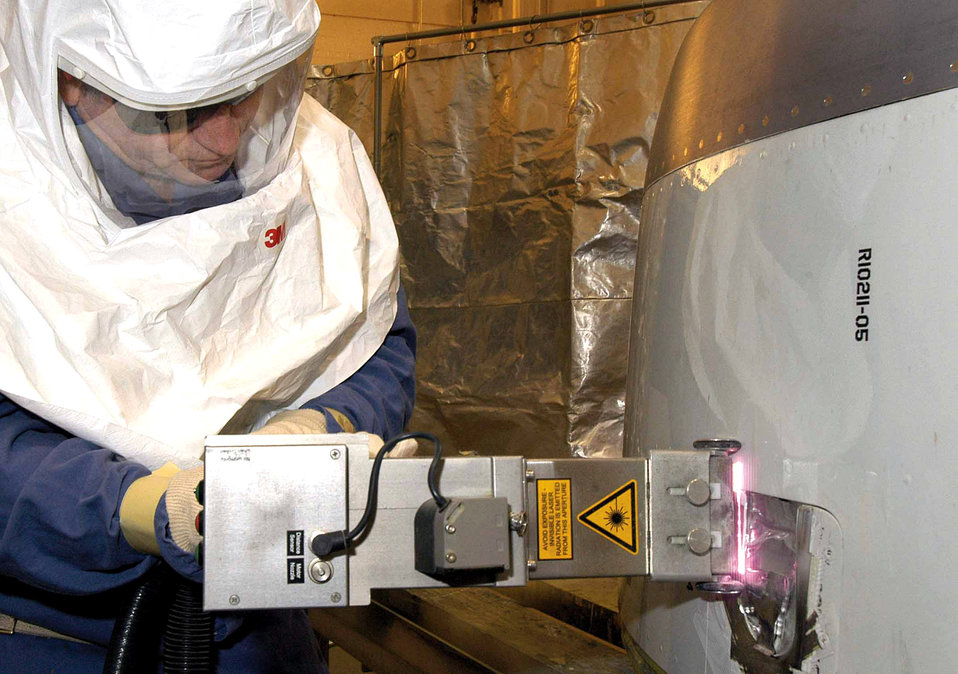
Paint removal process lessens production time, health hazards

Laser operator Alvin Howard removes paint from E-3 Sentry nose cowling openings using a hand-held laser. The new process replaces less friendly liquid removers used for the many small areas on aircraft components and looks promising for wider aircraft paint removal uses in the future.